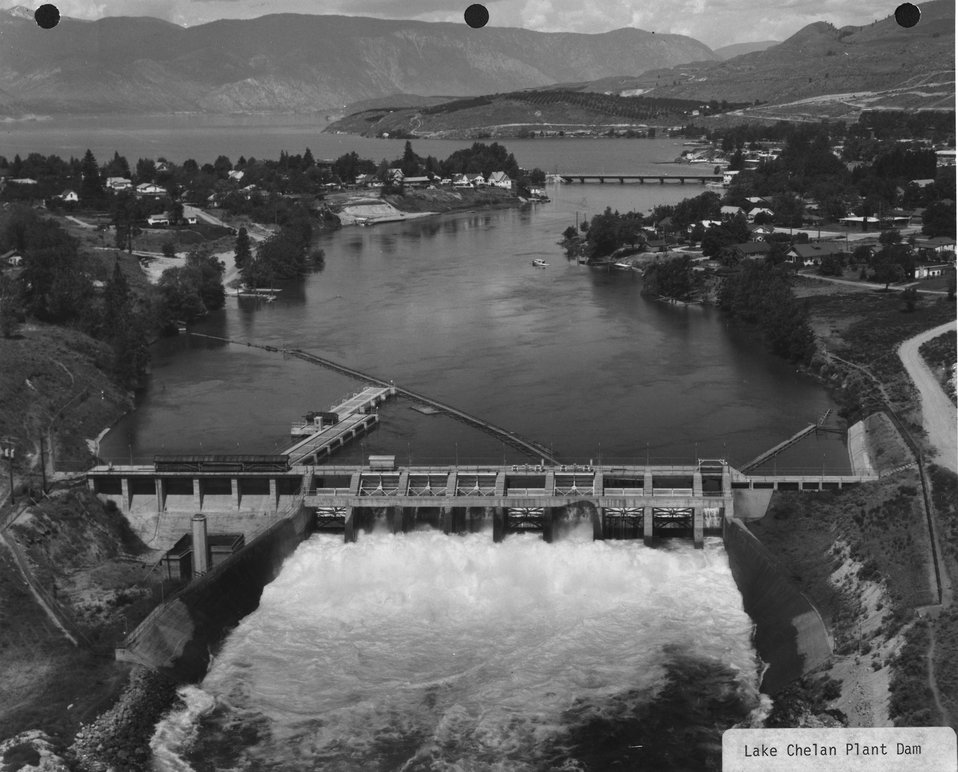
Lake Chelan Plant Dam. c. undated